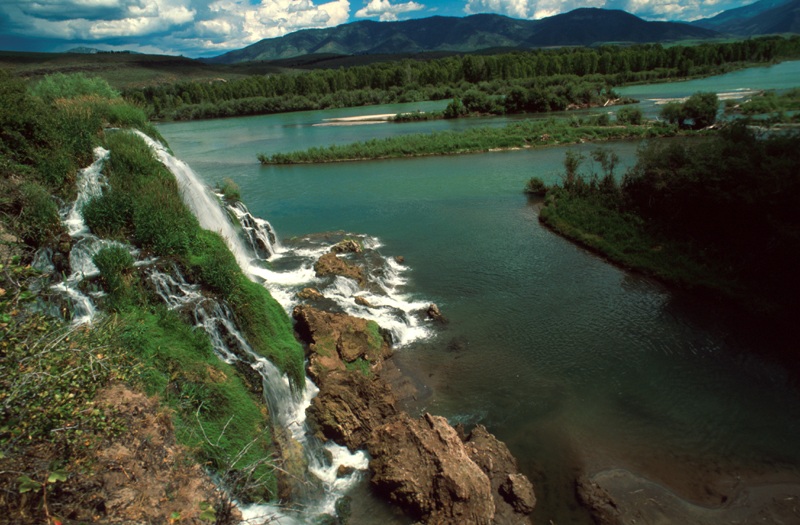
Fall Creek Falls Snake River Canyon